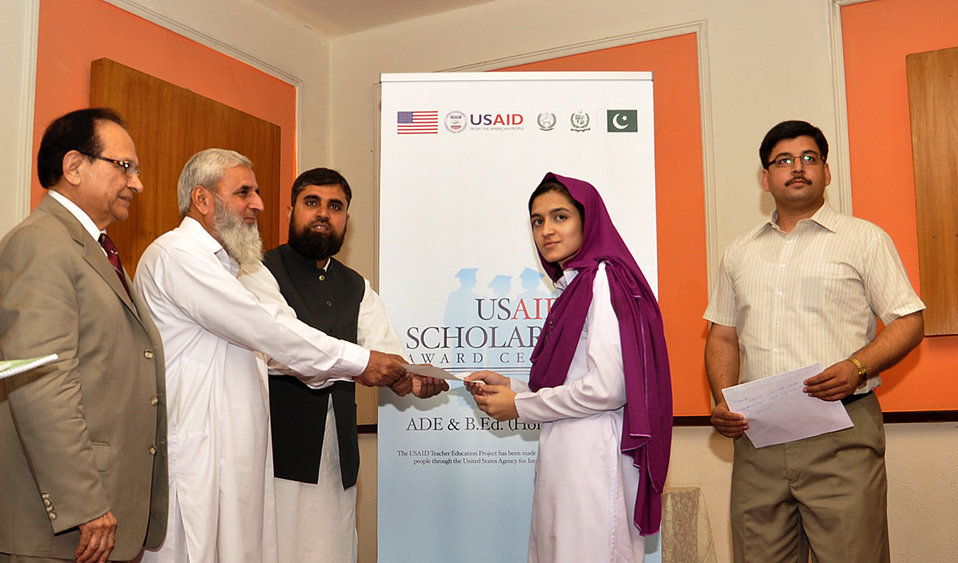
Award

The U.S. Agency for International Development (USAID) provided scholarship awards to 147 student-teachers from various KP universities and colleges . The picture shows a girl student receiving a USAID scholarship award from Mr. Farid Qureshi, Special Secretary Elementary & Secondary Education, Khyber Pakhtunkhwa (second from left) and Mr. Fazal Rabbi, Program Management Specialist (Education), U.S. Agency for International Development (USAID). Dr. Mehmood ul Hassan Butt, Chief of Part, USAID Teacher Education Project (far left) is also present.